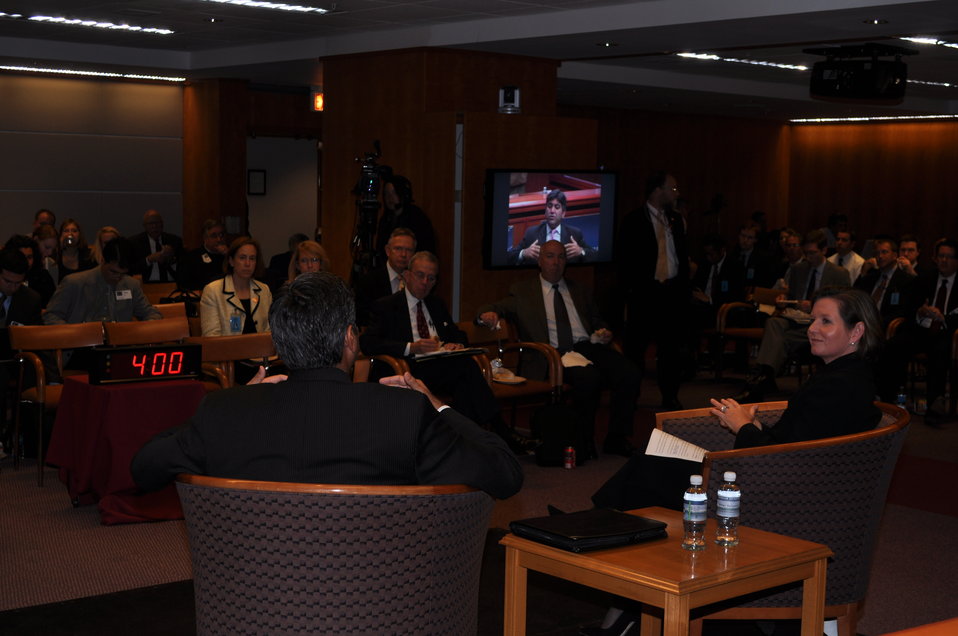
Spectrum Summit